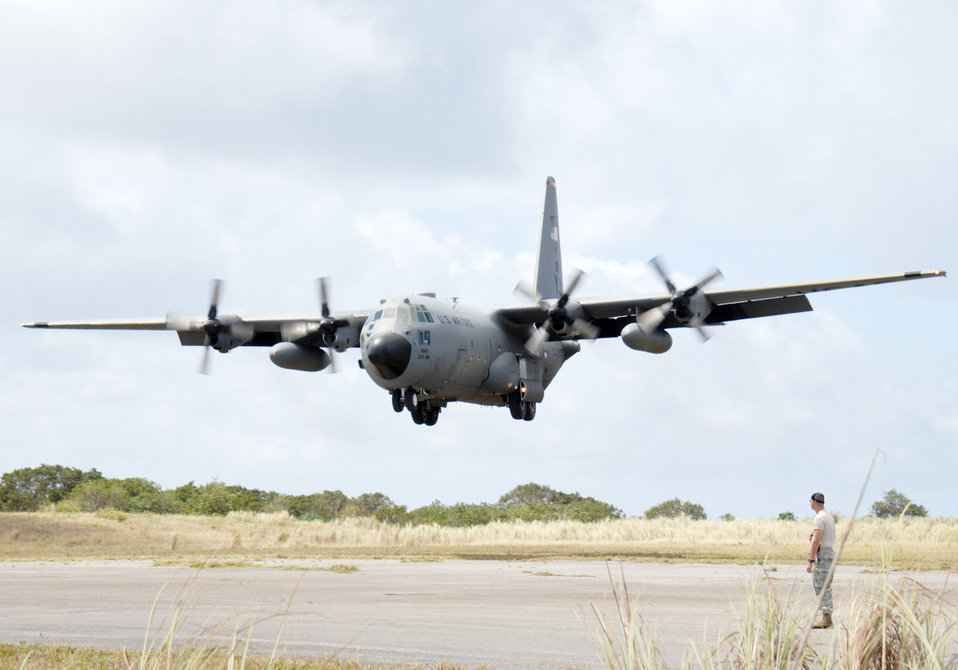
Time to land

Staff Sgt. Sean Cripe, an air traffic controller with the 36th Mobility Response Squadron, watches a C-130 Hercules land at a field next to Andersen Air Force Base, Guam, Feb. 17, 2010. The 36th Contingency Response Group at Andersen and the 374th Operations Group from Yokota Air Base, Japan, participated in a mock deployment to rehearse actions for disaster relief operations.